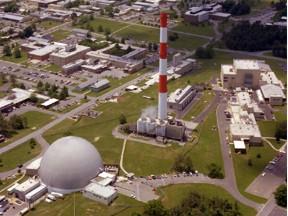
High Flux Beam Reactor - Brookhaven

Operating from 1965-1996, the High Flux Beam Reactor (domed complex, bottom left), located at the Brookhaven National Laboratory, was constructed solely for scientific research, providing neutrons for materials science, chemistry, biology, and physics experiments. EM is now focusing efforts to decommission and demolish this facility.